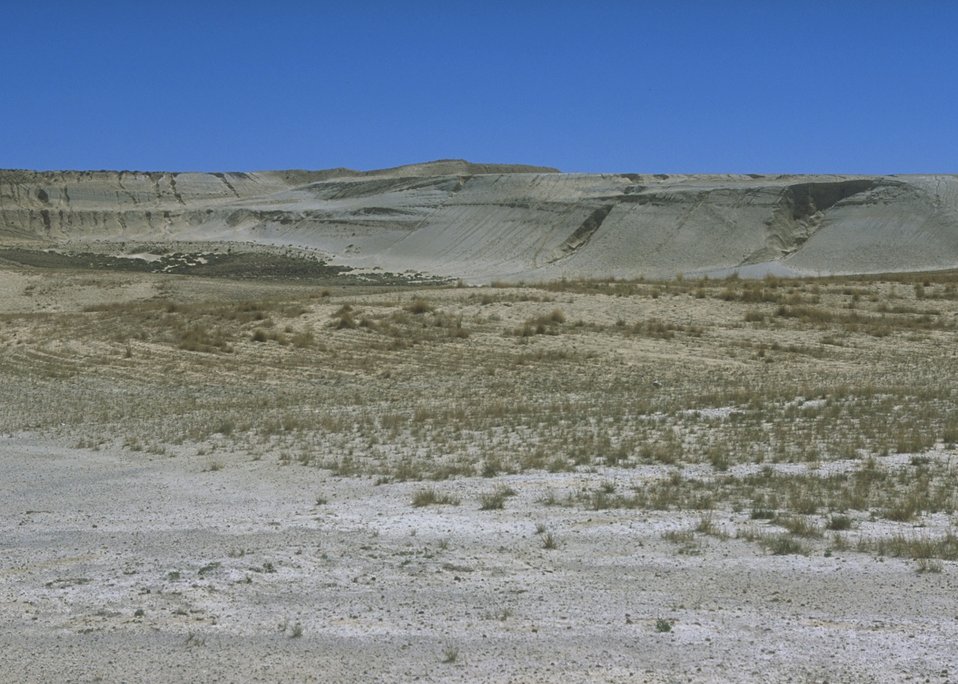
Gas Hill Abandoned Mine Lands in various stages of rehabilitation, Lander Field Office.